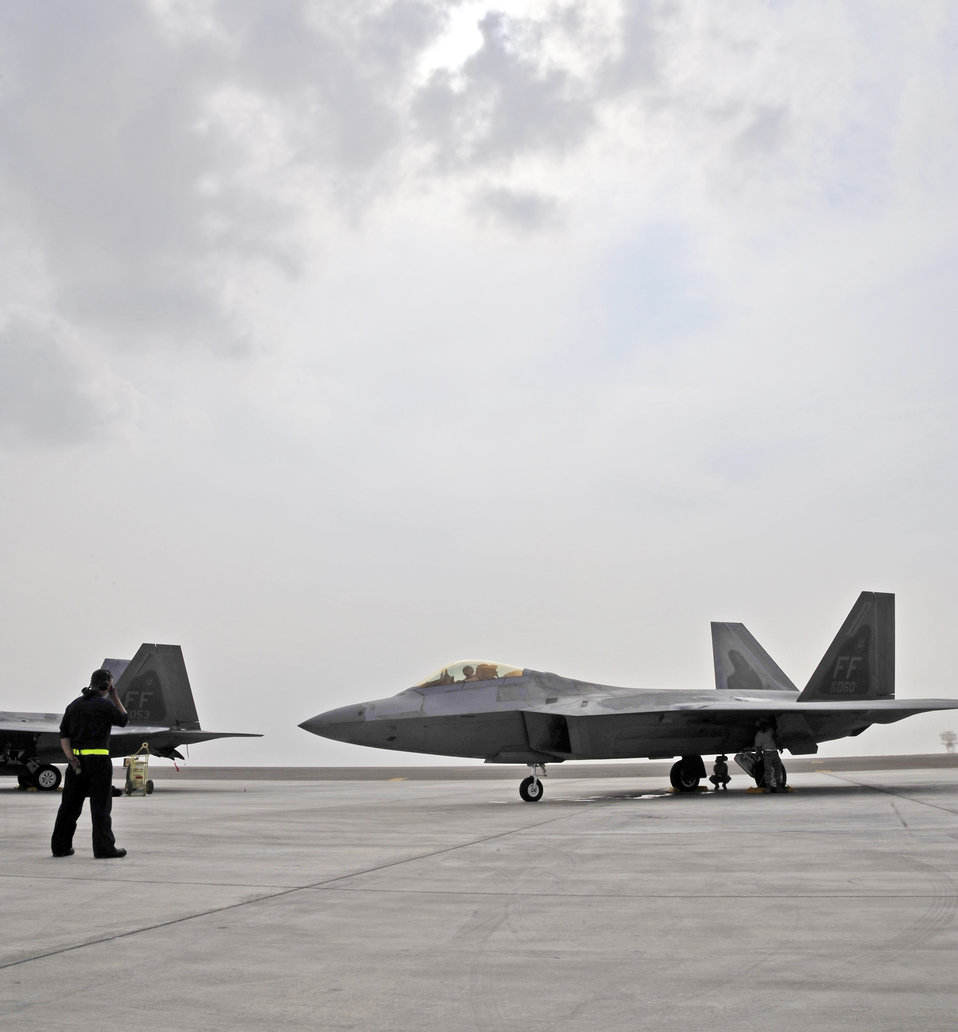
Raptors fly in Iron Falcon

Senior Airman Adam Smith, 1st Fighter Wing crew chief, prepares to marshal an F-22 Raptor Nov. 30, 2009, at an airfield in Southwest Asia. Airman Smith is participating in the Iron Falcon exercise while on temporary duty from Langley Air Force Base, Va. Airman Smith is from Boston.